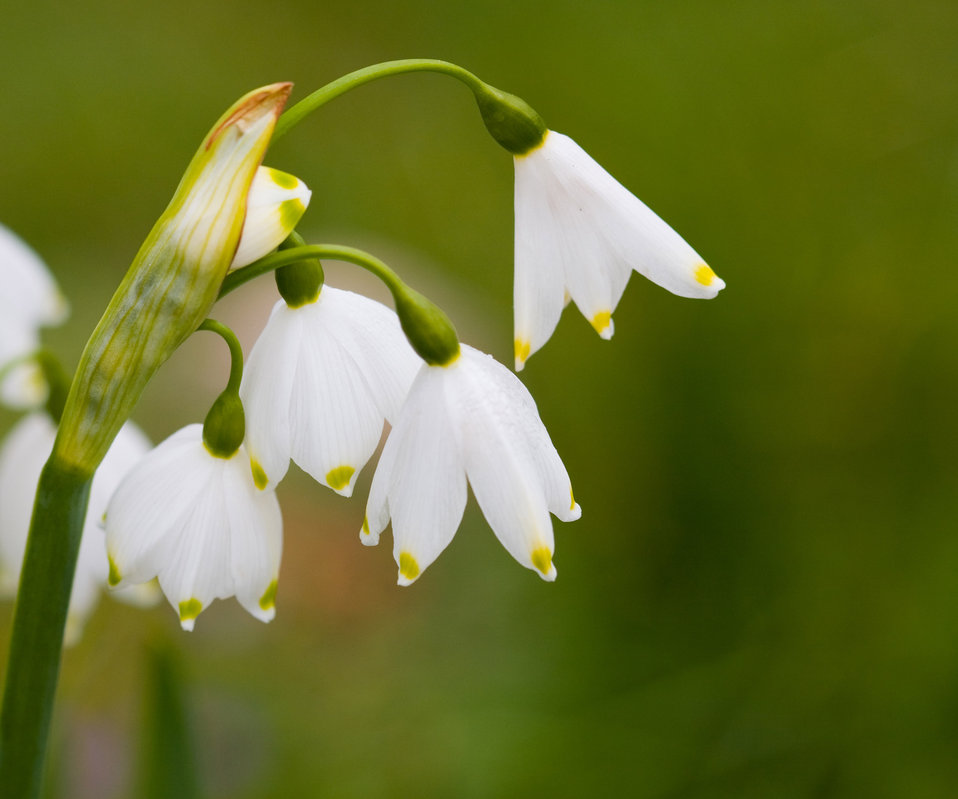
Snowdrops

Macro image of beautiful snowdrop flowers in close-up.